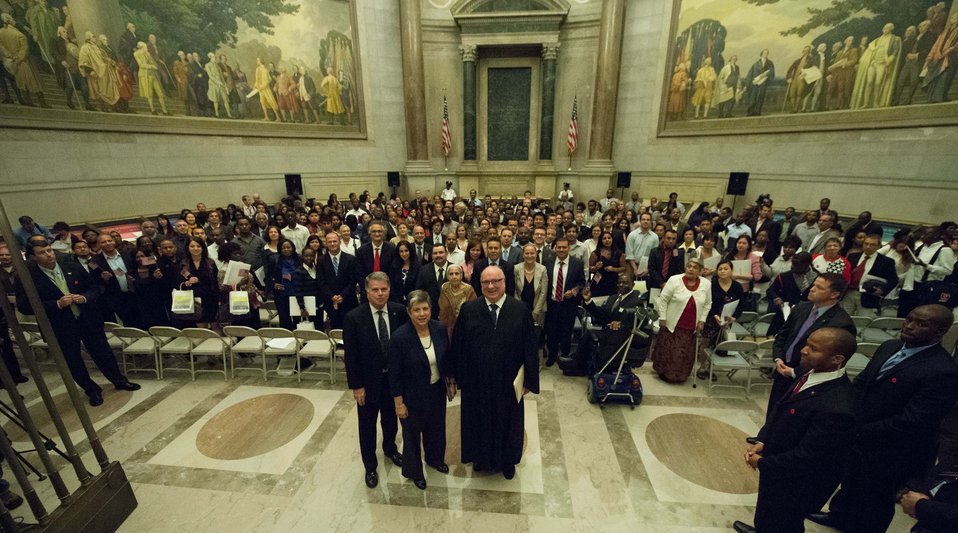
Constitution Day Naturalization Ceremony

After the ceremony, everyone turned around and squeezed together for a group portrait. In the front are Archivist of the United States David S. Ferriero, Secretary of Homeland Security Janet Napolitano, and Honorable Royce Lamberth, United States District Court for the District of Columbia.